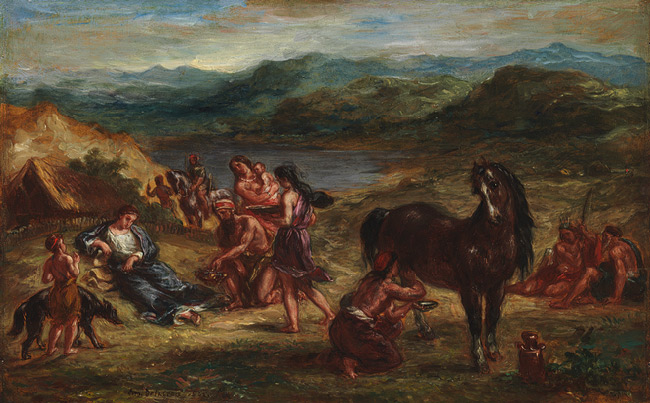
001 Ovid among the Scythians (oil on paper laid down on wood)